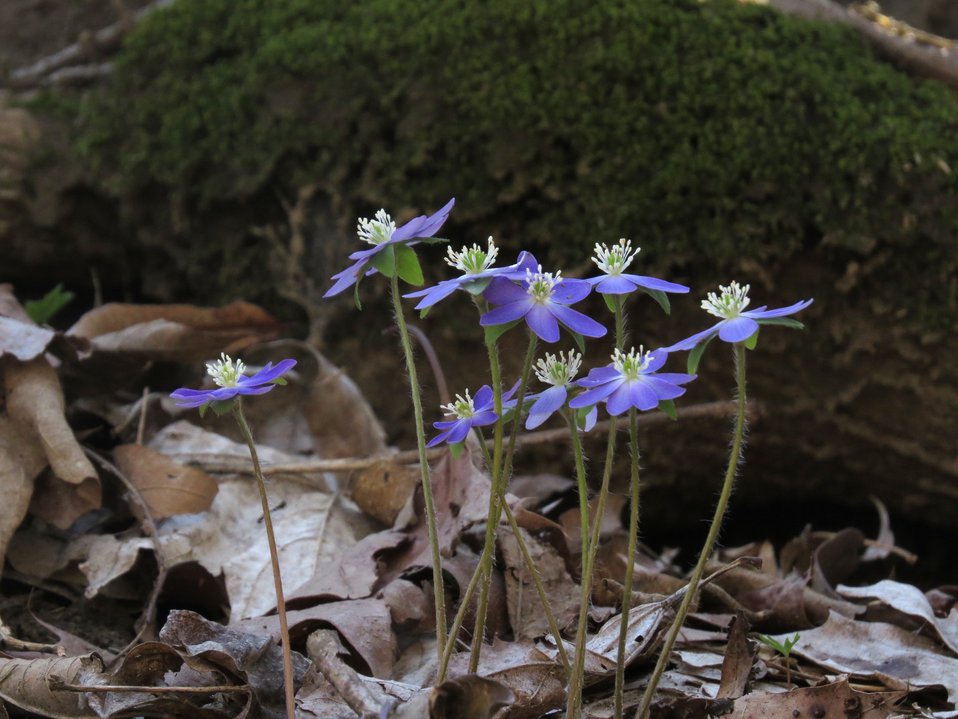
Sharped-Lobed Hepatica